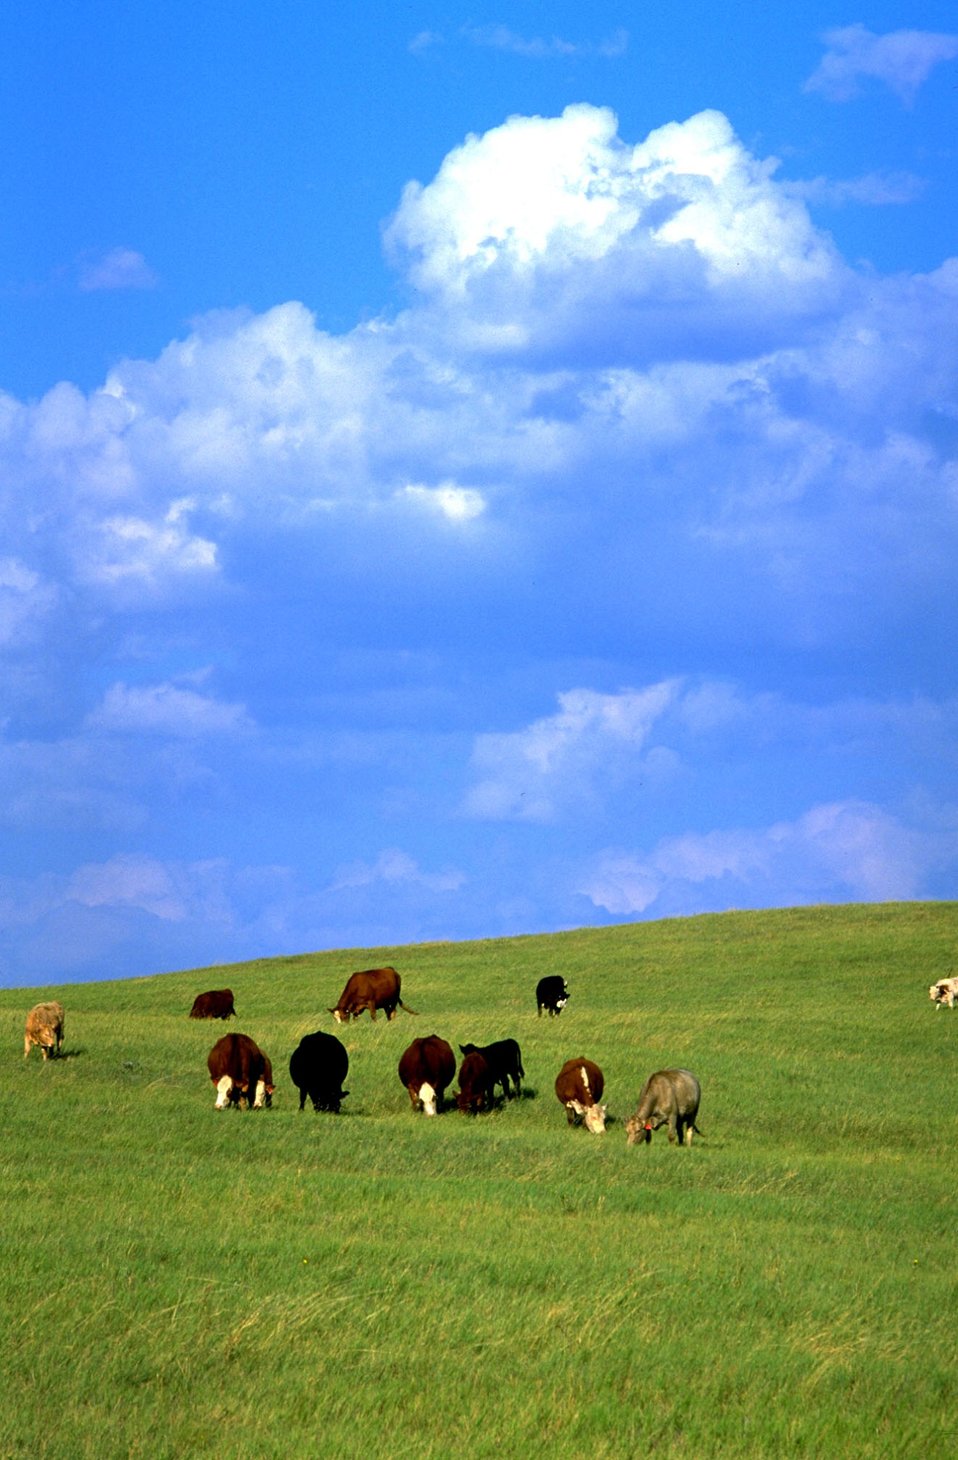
Cattle grazing 45 miles north of Belle Fourche